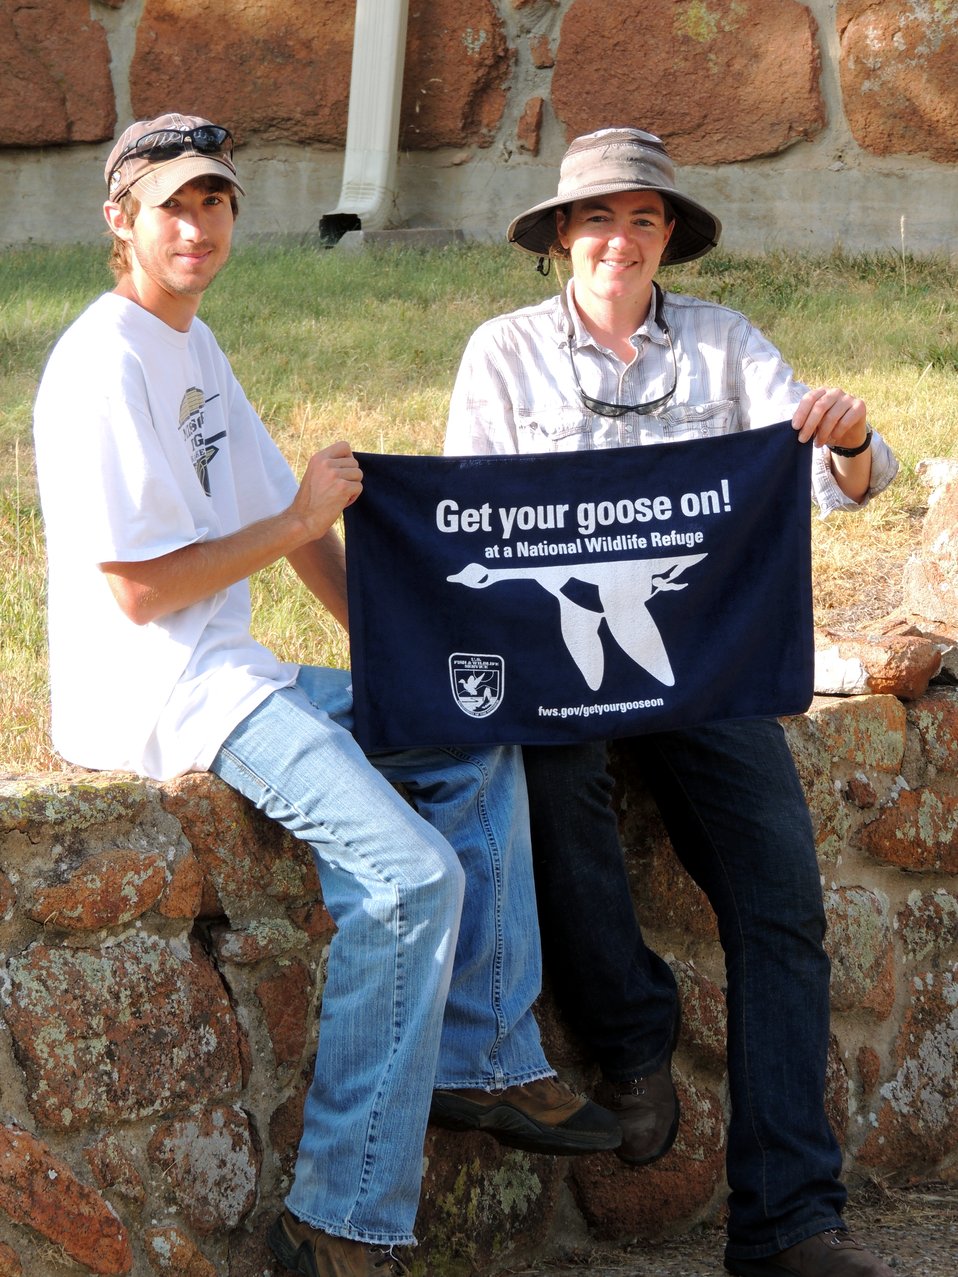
Get Your Goose On!

Wichita Mountains National Wildlife Refuge in Oklahoma.